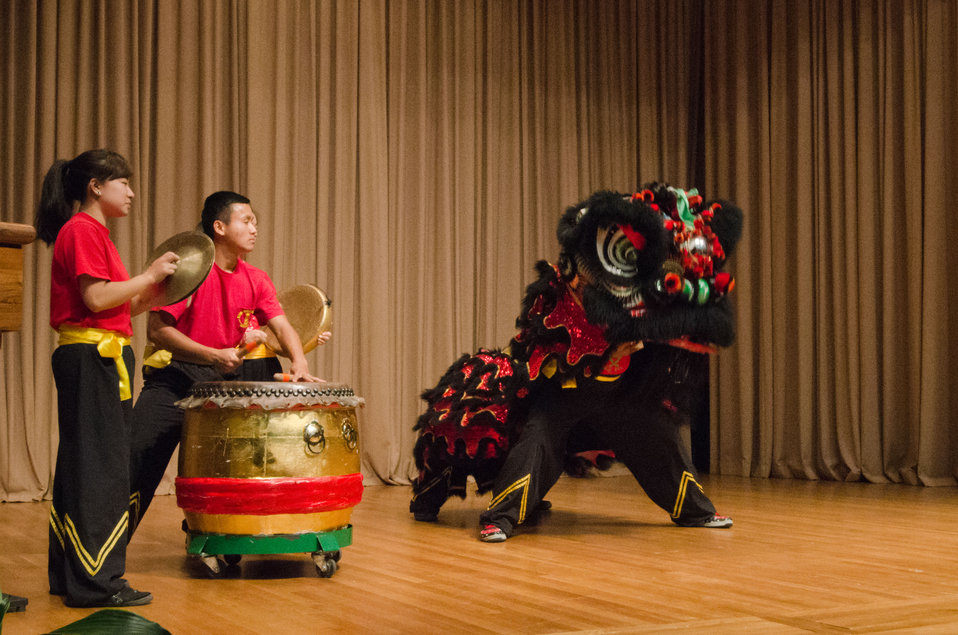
The Wong People Studio, The Ancient Chinese Dragon Dance Group performed the Dragon dance at the 2012 Asian Pacific American Heritage Observance “Striving for Excellence in Leadership, Diversity and Inclusion” at the U.S. Department of Agriculture in Washington, D.C. on Thursday, May 24, 2012. The Dragon dance is an ancient ritual based on Taoist Principles used to drive away evil spirits or bad energy (chi). The costume worn while performing this ritual is specifically designed for the purpose of driving away evil. The music for the Dragon Ritual is also an integral element of this energy directing ritual. A Dragon Ritual is successful when the Dragon, musicians and spectators synchronize their flow of internal energy (chi) to drive away the bad energy.